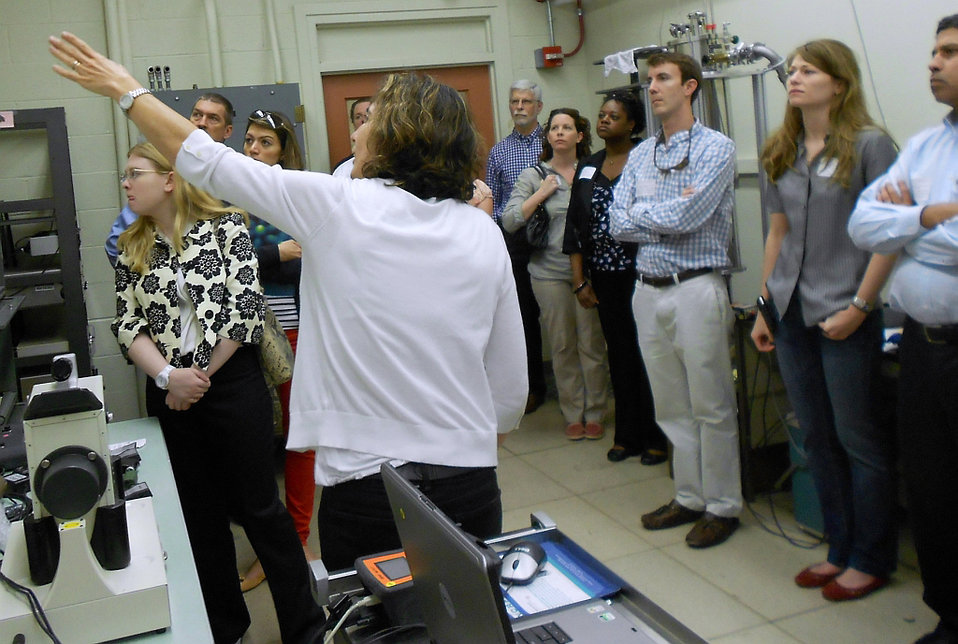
Congressional Staff Tour

Leticia Pibida (Center) of the Radiation and Biomolecular Physics Division in NIST’s Physical Measurement Laboratory describes the testing and evaluation of hand held detectors to a tour of congressional staff members of the Homeland Security Dialogue Forum.